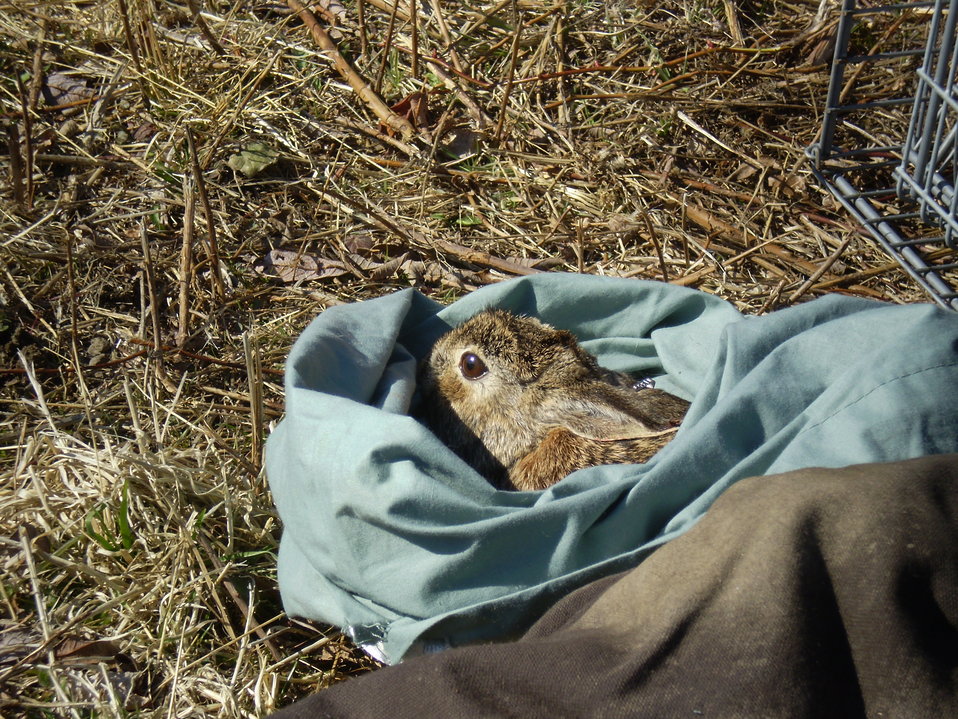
Finding New England cottontails

A close-up of a rabbit on the Aquidneck Land Trust in Rhode Island.

The information from this rabbit will help specify what type of rabbit lives there--the non-native eastern or native New England cottontails.